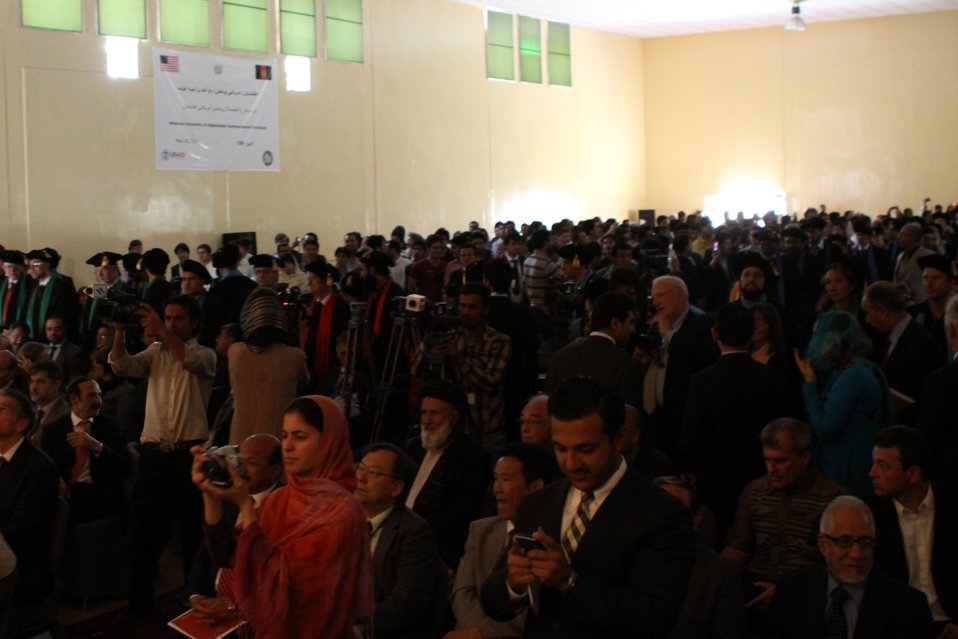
100526 AUAF Graduation 124